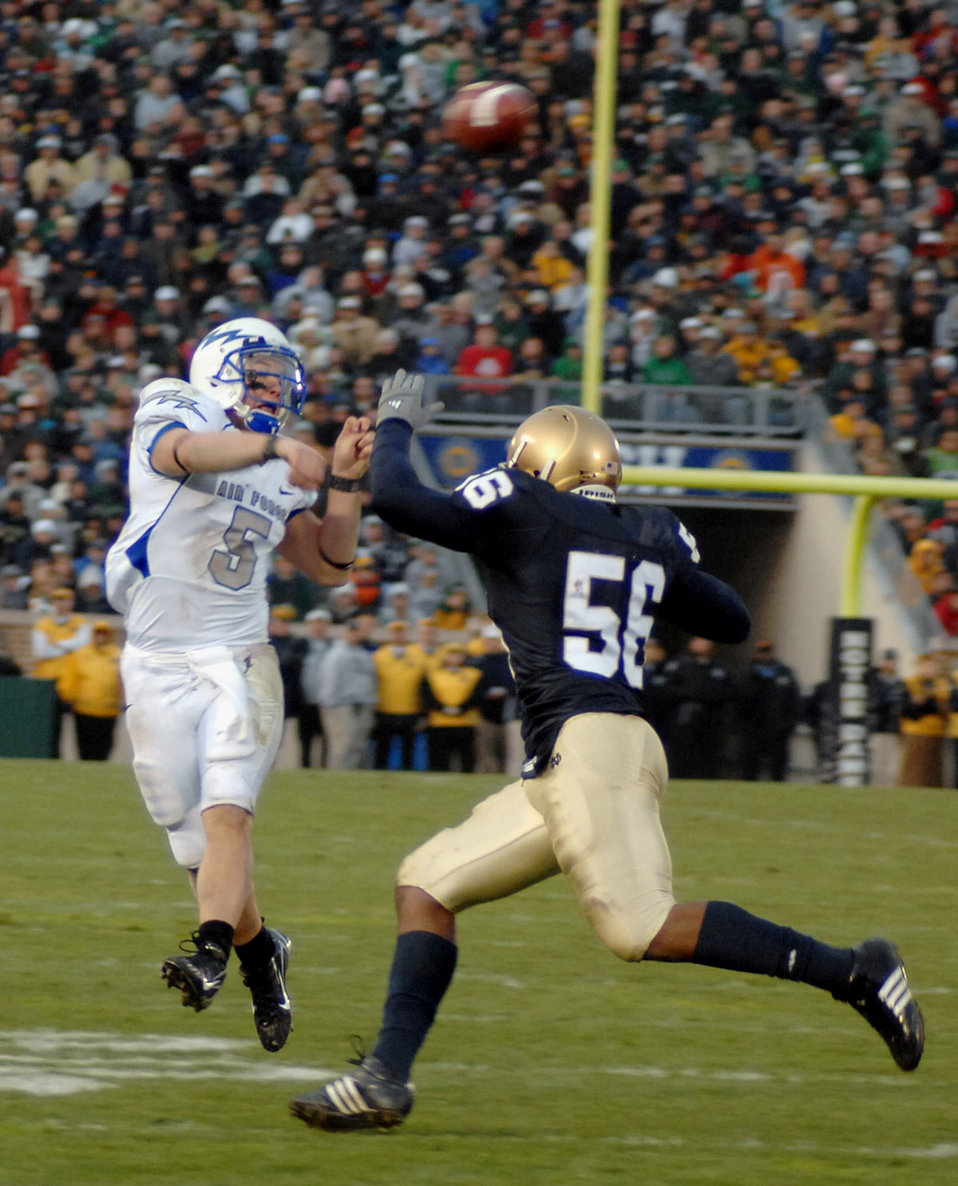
Football: Falcons outfight Irish, 41-24

U.S. Air Force Academy Falcons quarterback Shaun Carney throws over Irish linebacker Kerry Neal during the Air Force Academy's 41-24 win over Notre Dame Nov. 10 at Notre Dame Stadium in Indiana.